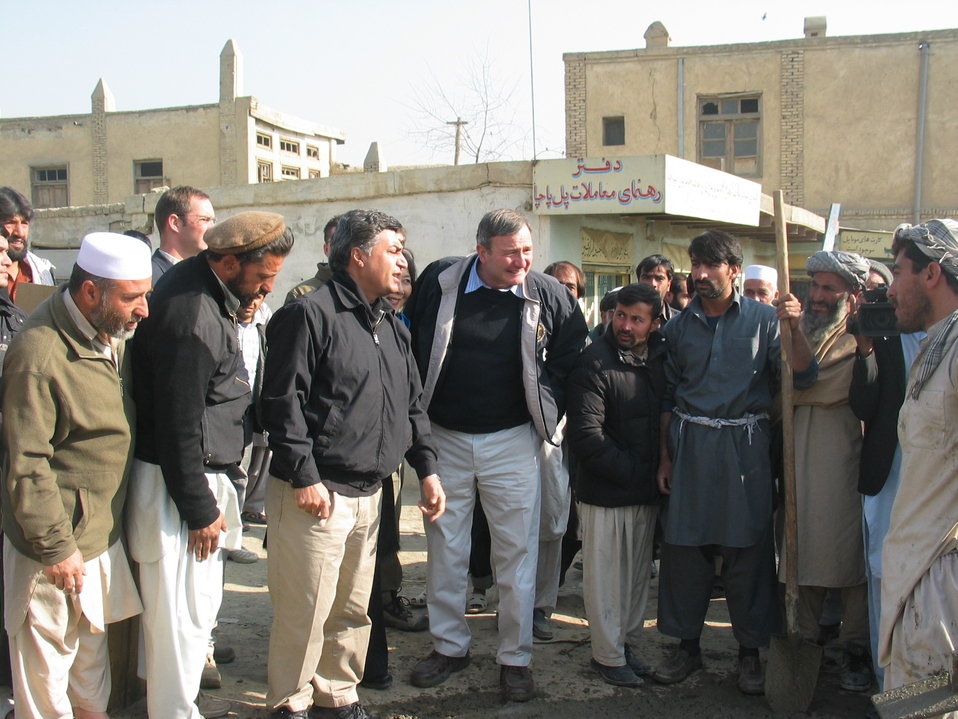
Kabul River Bridge Renovation, December 3, 2010